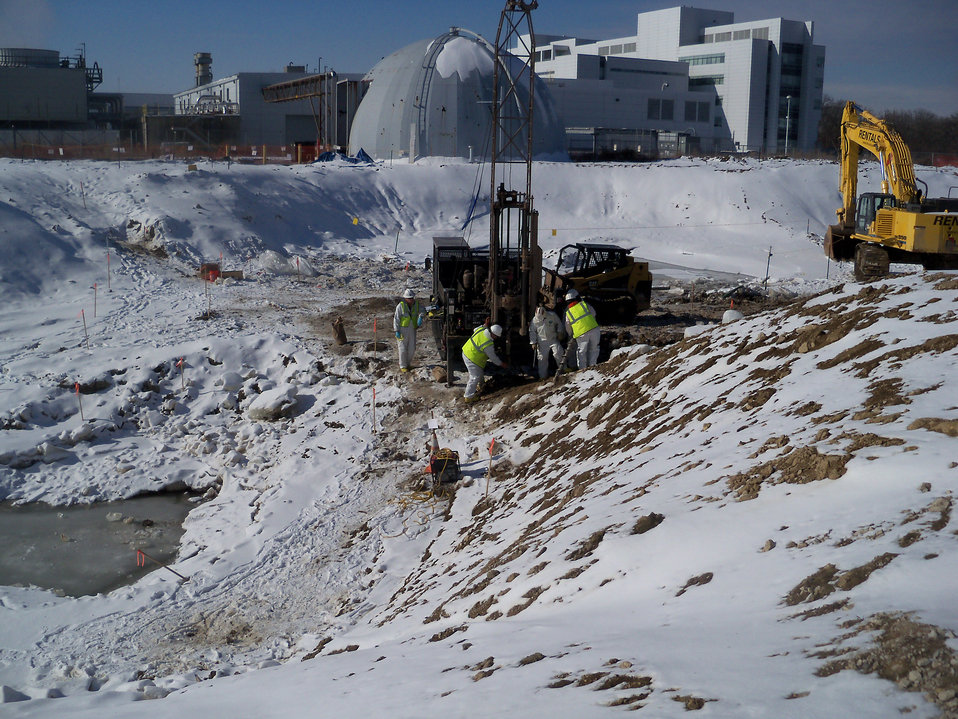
Argonne Forges Ahead in Waste Removal, Facility Demolitions with Recovery Act Help

A drill-rig crew takes soil sample bores for analysis as part of decontamination and demolition of Argonne's Building 330, the former site of the historic Chicago Pile-5, the fifth and final member of the Chicago Pile family of pioneering research reactors.